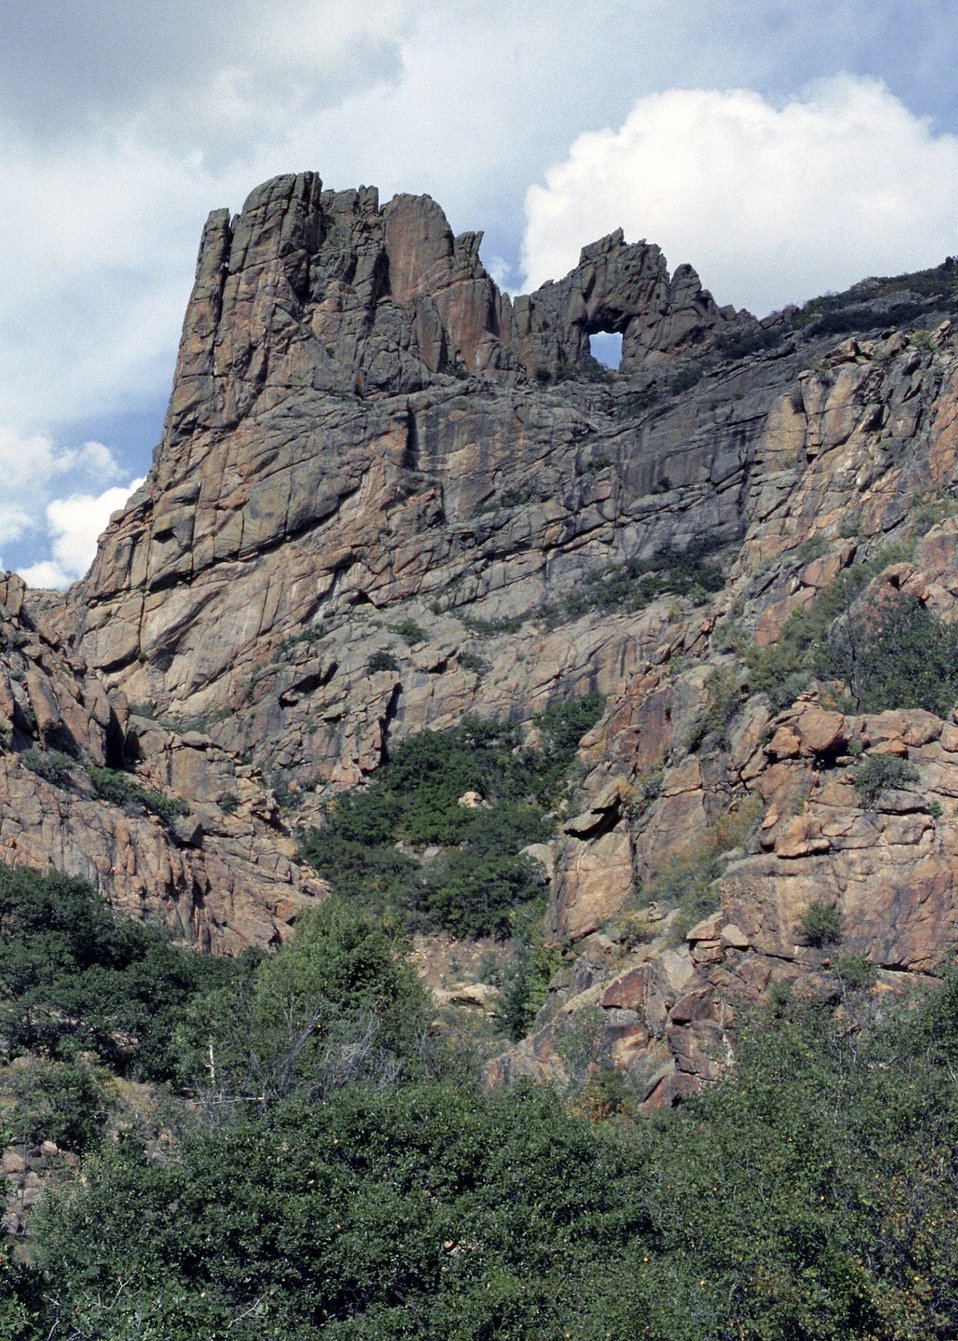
Sand Guitch Cities